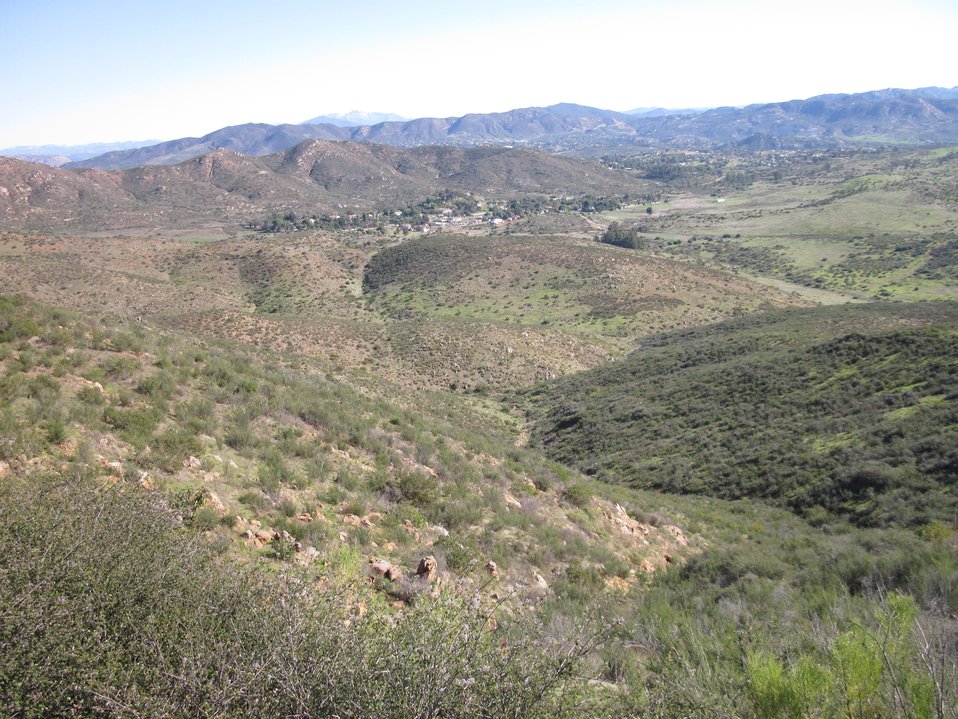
Hidden Valley landscape shot

(USFWS)